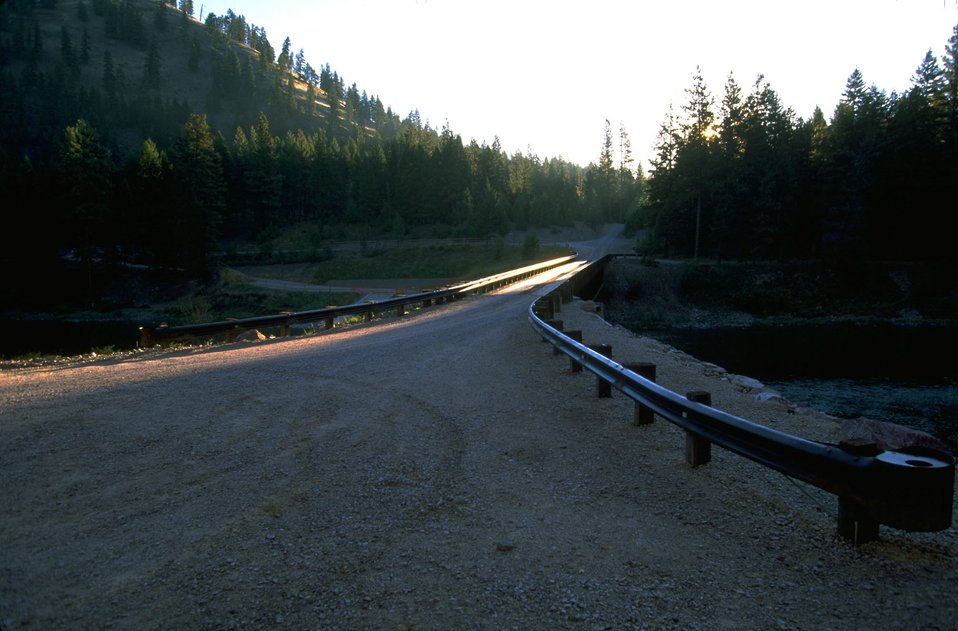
Whitaker Bridge on the Blackfoot River